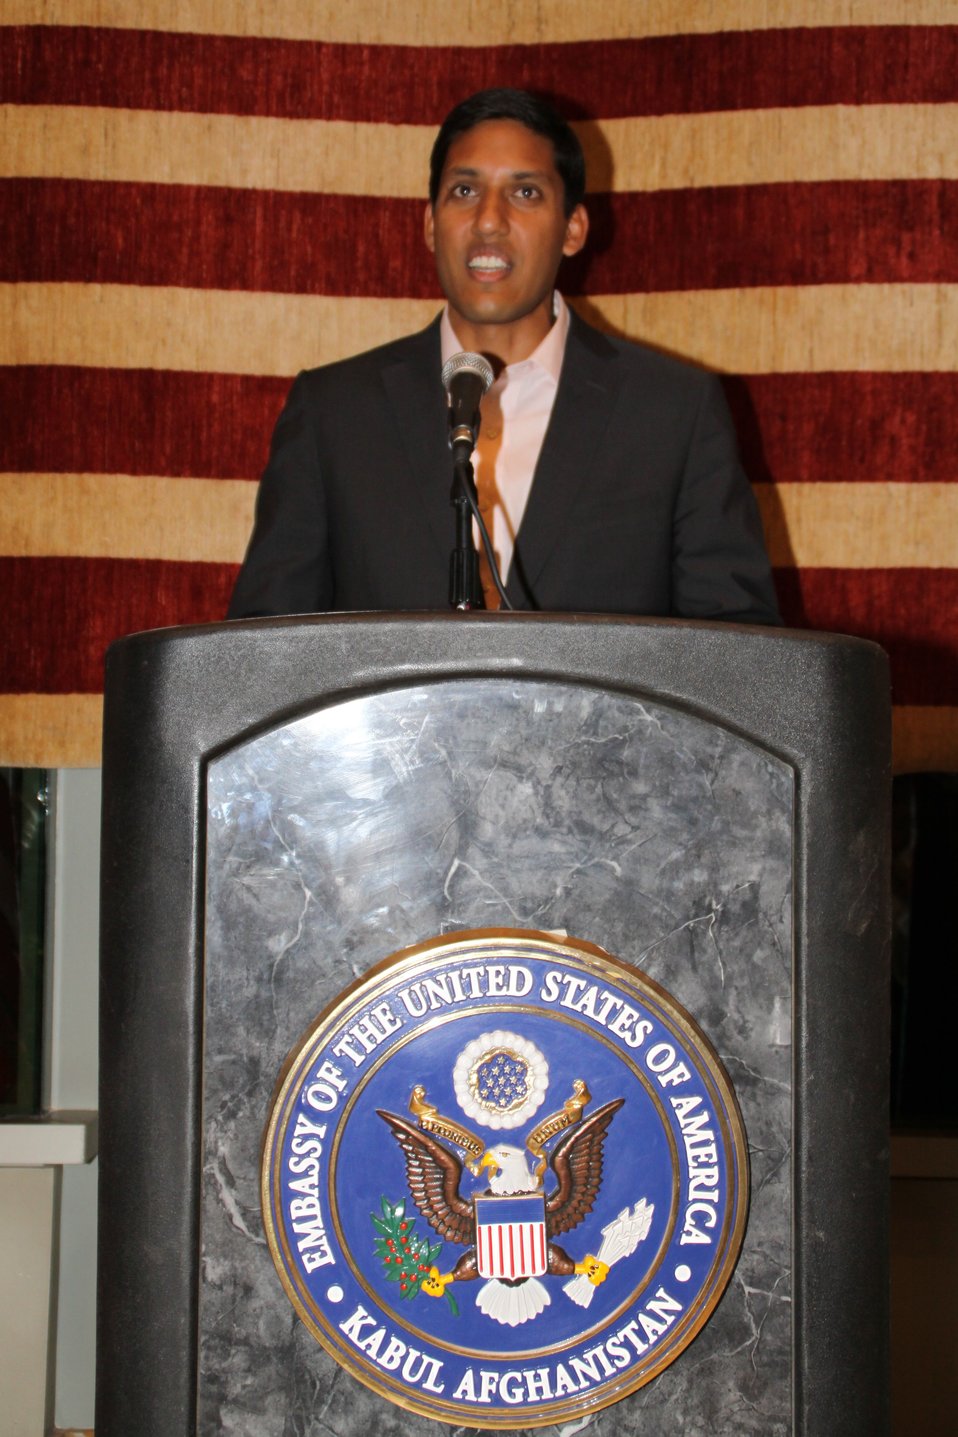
US Embassy Town Hall July 21, 2010